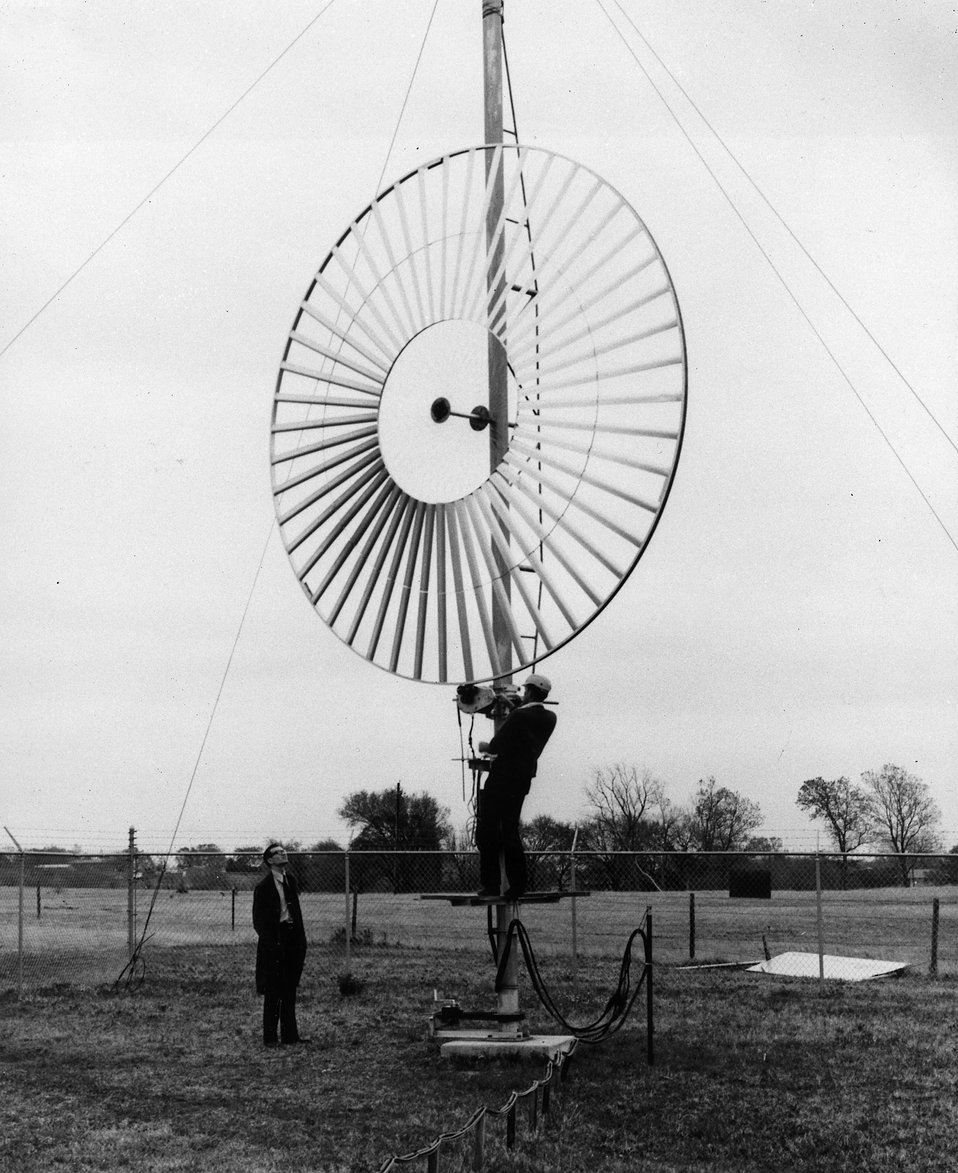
Scientists at Oklahoma State University, Stillwater, Oklahoma, are testing windmill resembling a bicycle wheel for the U.S. Department of Energy. c. 1975